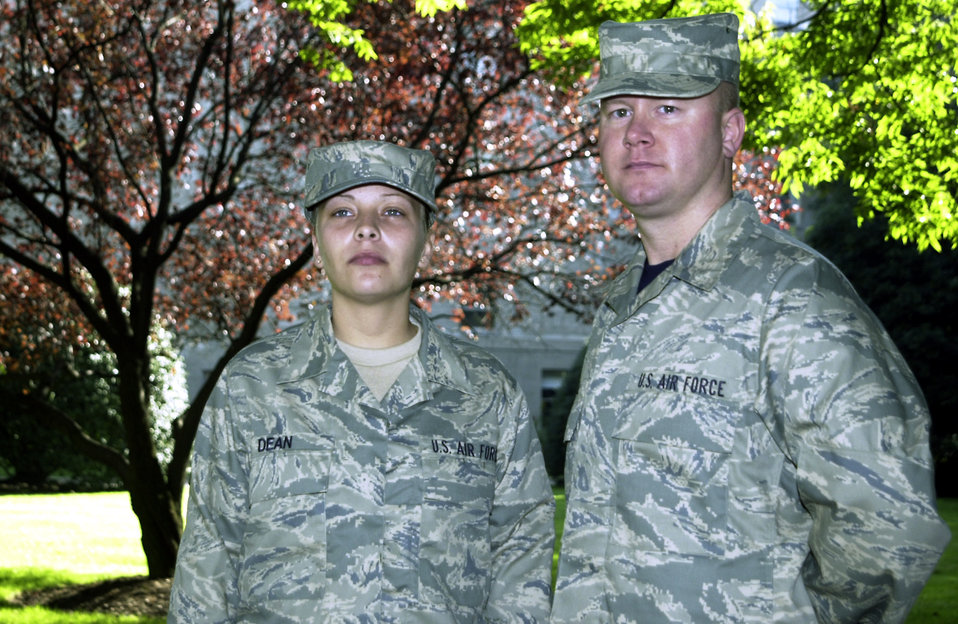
Air Force finalizes new utility uniform

WASHINGTON -- Air Force officials released photos of the latest version of the proposed Air Force utility uniform. Special operations and survival, evasion, resistance and escape Airmen will conduct a limited wear test of the new design at Eglin Air Force Base, Fla., Hurlburt Field, Fla., and Fairchild AFB, Wash., in June.